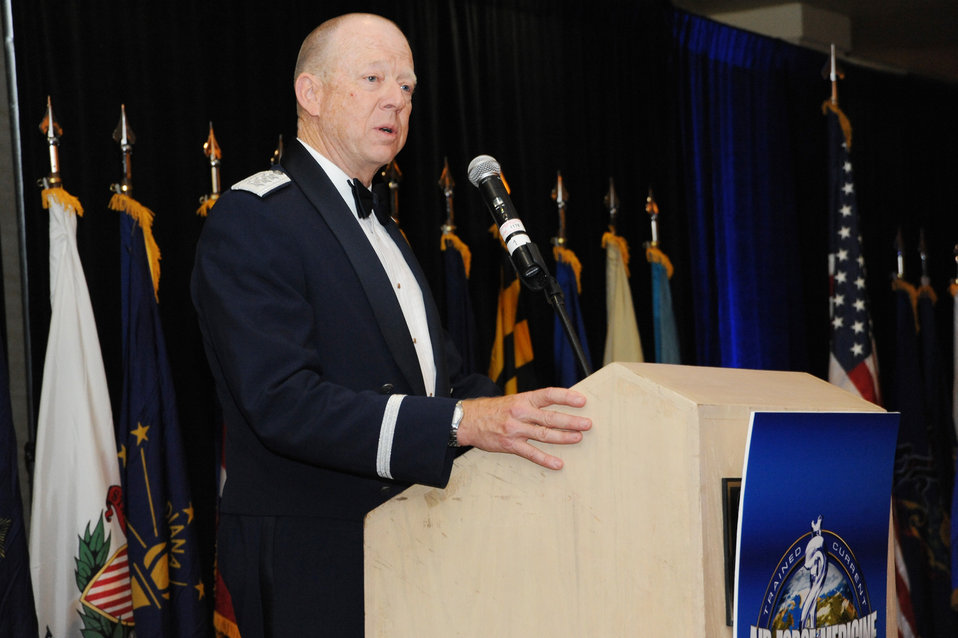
60th anniversary of the Air Force medical service

Lt. Gen. (Dr.) James G. Roudebush, surgeon general of the Air Force, speaks to a crowd of Air Force medical service personnel during a dinner ceremony in downtown San Antonio. The event marked the 60th anniversary of the Air Force medical service and included recognition of medical service personnel in attendance who had been injured in the line of duty. Several Airmen also donned Air Force uniforms displaying it's evolution since the Air Force's inception.